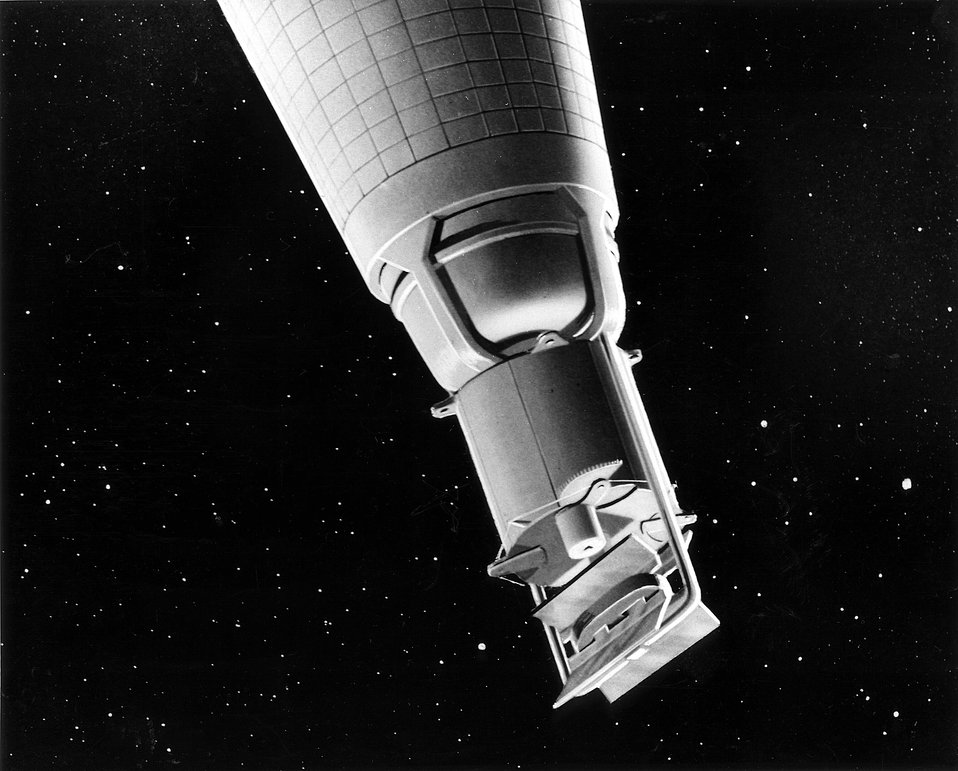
Artist's conception of SNAP 10A system in space showing details of the compact nuclear reactor.